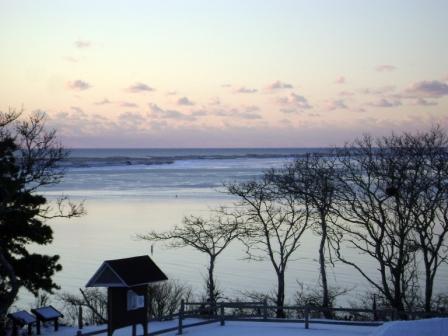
Morris Island

Monomoy National Wildlife Refuge, MA.